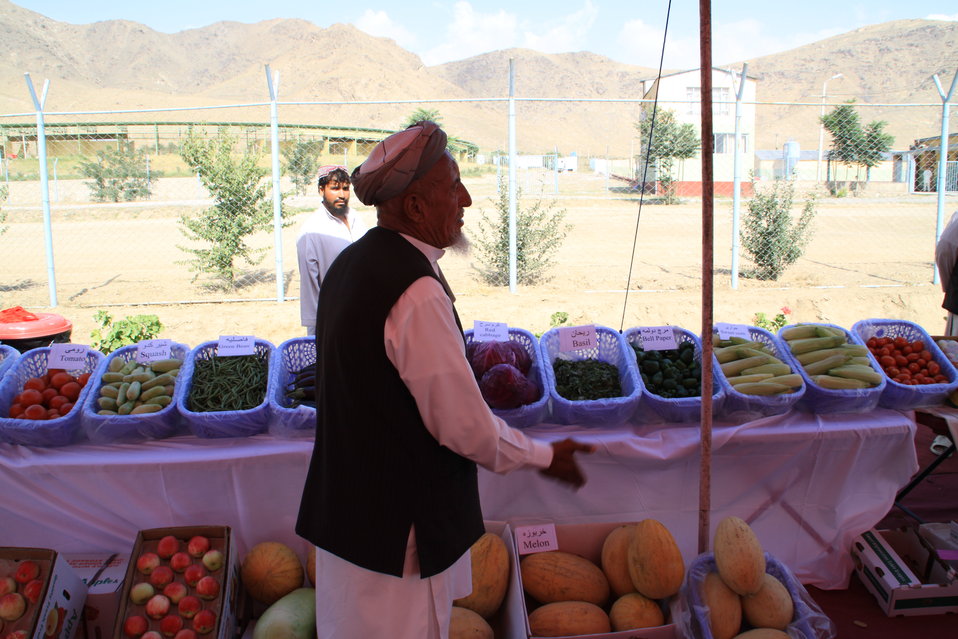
Badam Bagh Farm